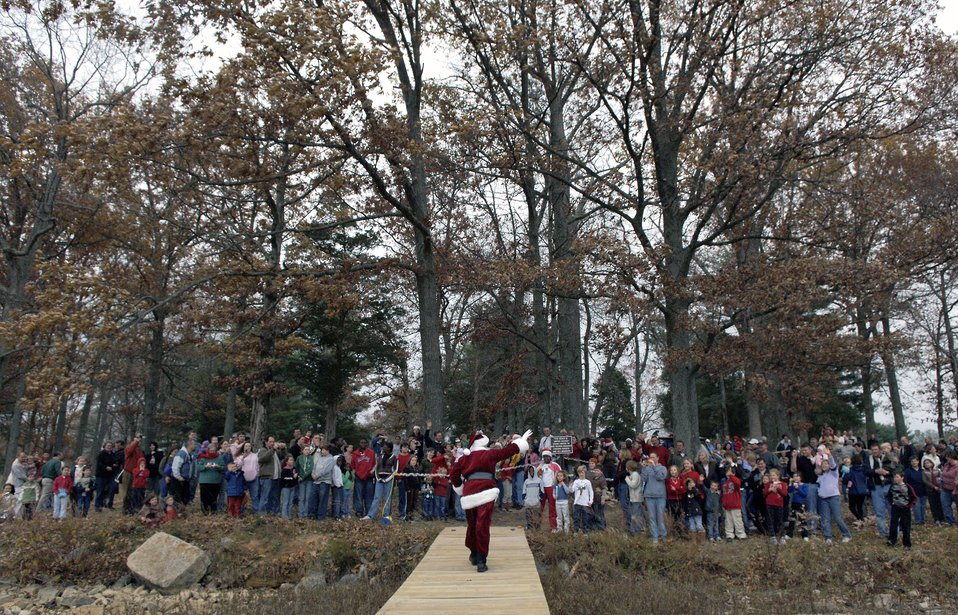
Santa brings holiday cheer to Arnold party

Santa Claus greets well-wishers lining the shore of the base lake at Arnold Air Force Base, Tenn., Dec. 2 after arriving on a small amphibious aircraft. Santa was there for the annual holiday Christmas party at Arnold's Lakeside Club.